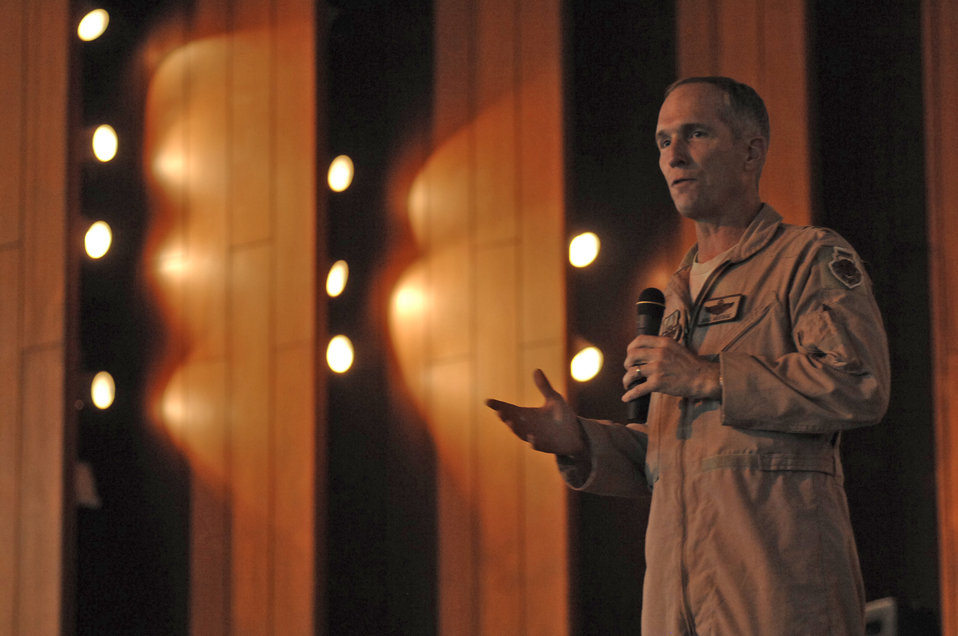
AFCENT commander, command chief visit JBB

Lt. Gen. Mike Hostage speaks to Airmen Aug. 25 at Joint Balad Base, Iraq. General Hostage and Chief Master Sgt. Scott Dearduff met with Army officials from the 13th Sustainment Command (Expeditionary), received a mission brief about the MC-12 aircraft and toured the Air Force Theater Hospital. General Hostage is the commander of U.S. Air Forces Central Command. Chief Dearduff is the AFCENT command chief.